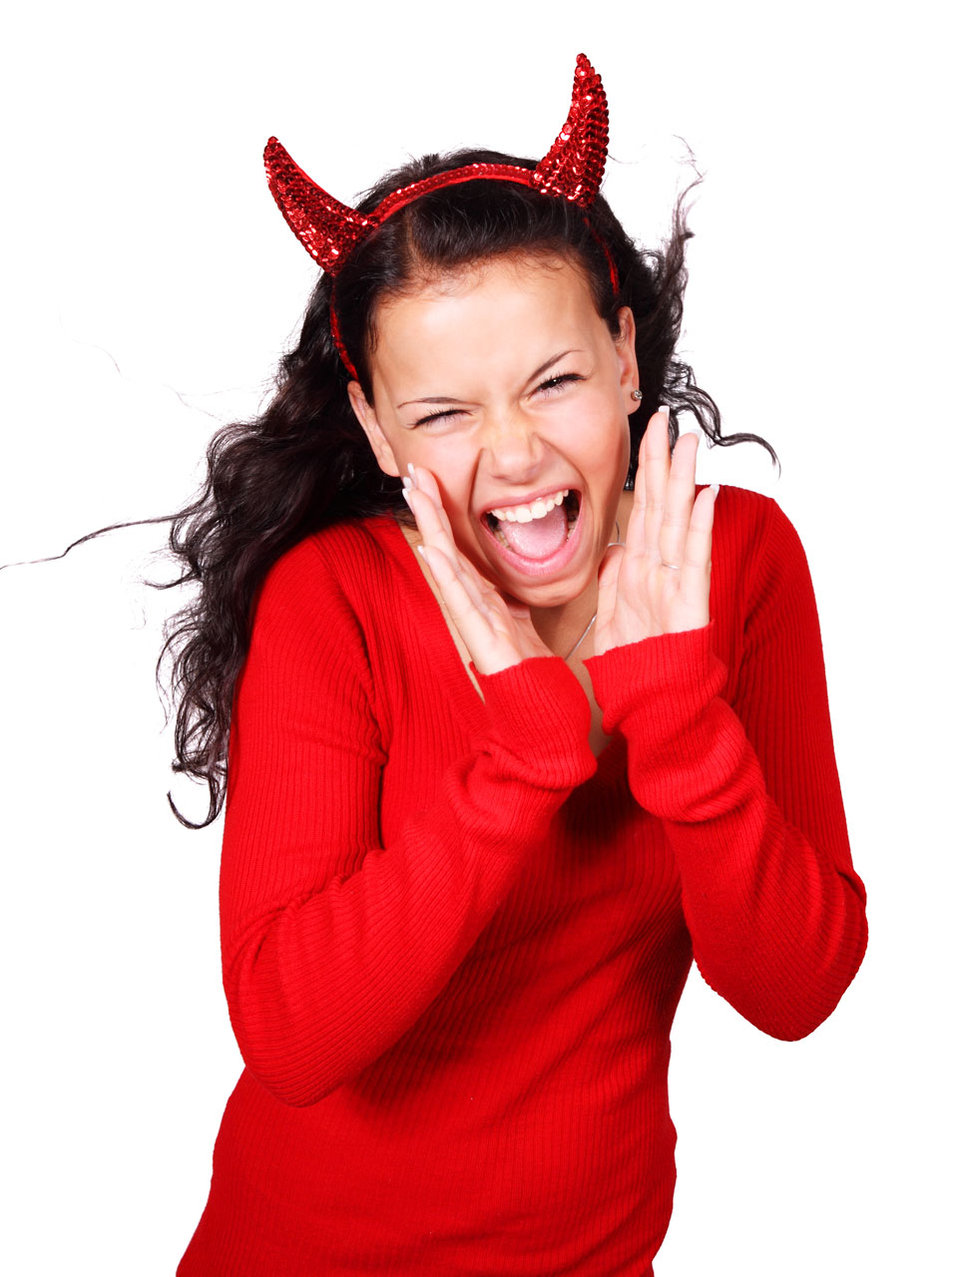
Screaming devil

Screaming female devil isolated on white background.